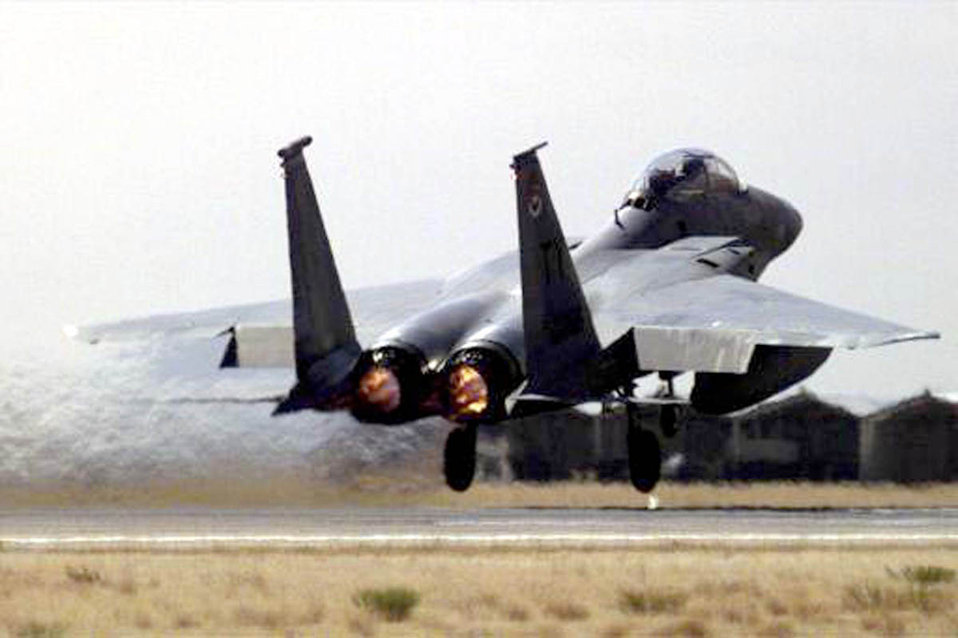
Roving Sands

FILE PHOTO -- An Air Force F-15 Eagle from the 95th Fighter Squadron, Tyndall Air Force Base, Fla., takes off for a mission during exercise Roving Sands '99.